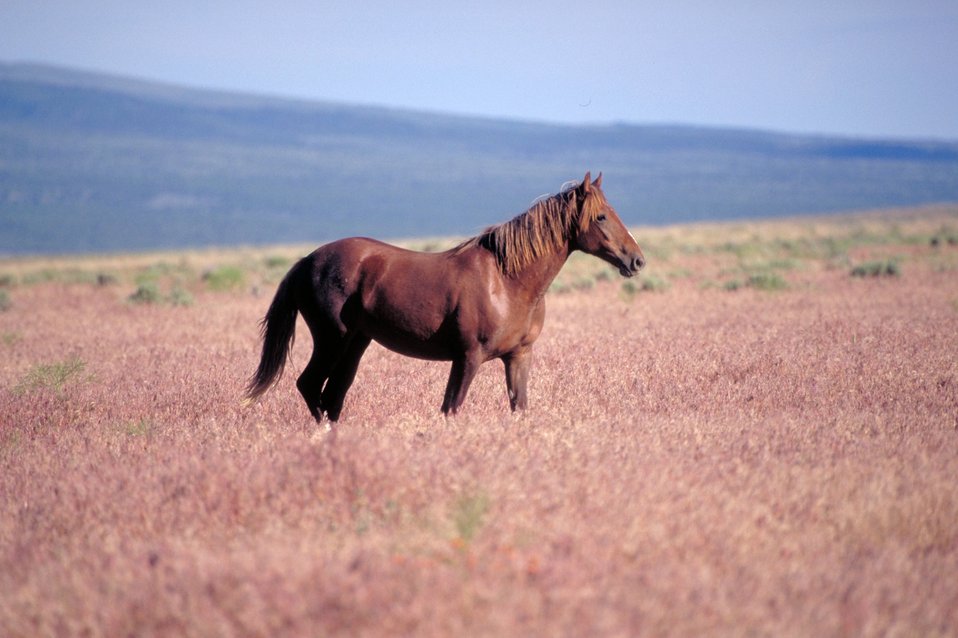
Onaqui Herd near Dugway, Utah.